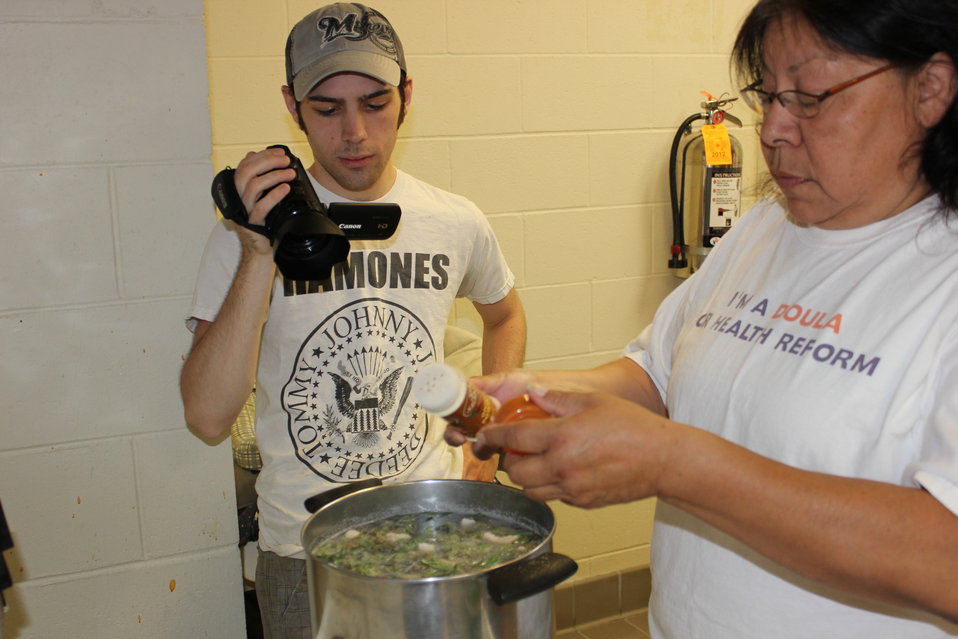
Native food filming

Bad River Tribal Member Elizabeth Nelson adds onion and garlic powder to her fiddlehead fern soup as cooking assistant Stephen Ante videotapes her. The footage will be used in the “Mino Wiisinidaa!” project.